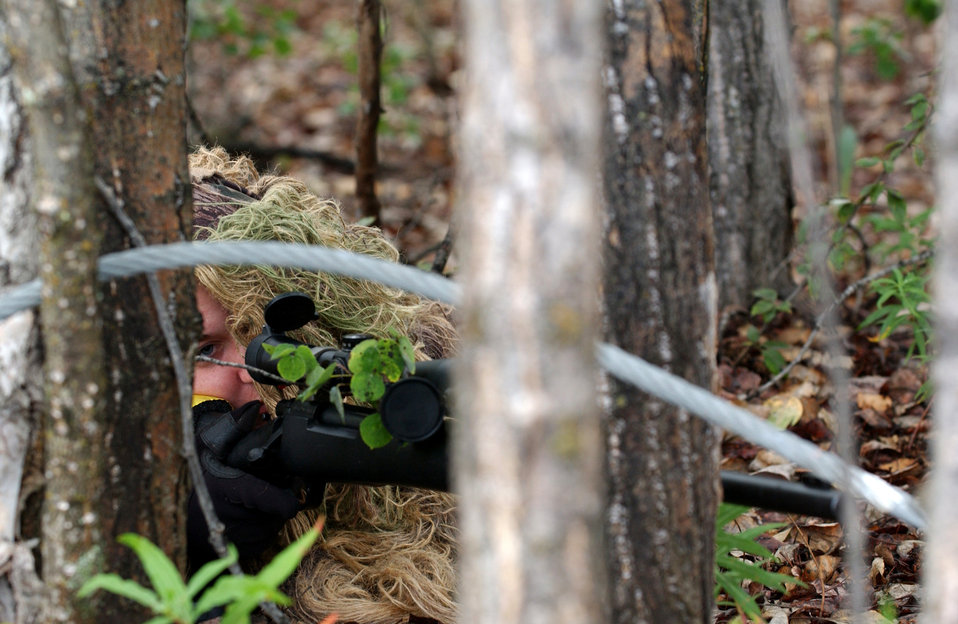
Under cover

Airman 1st Class Kristin Ferris positions herself in the brush during an exercise at Eielson Air Force Base, Alaska, on Aug. 8. Airman Ferris is one of five enlisted female snipers in the Air Force and participated in a training exercise to eliminate a terrorist in a hostage situation. She is assigned to the 354th Security Forces Squadron.